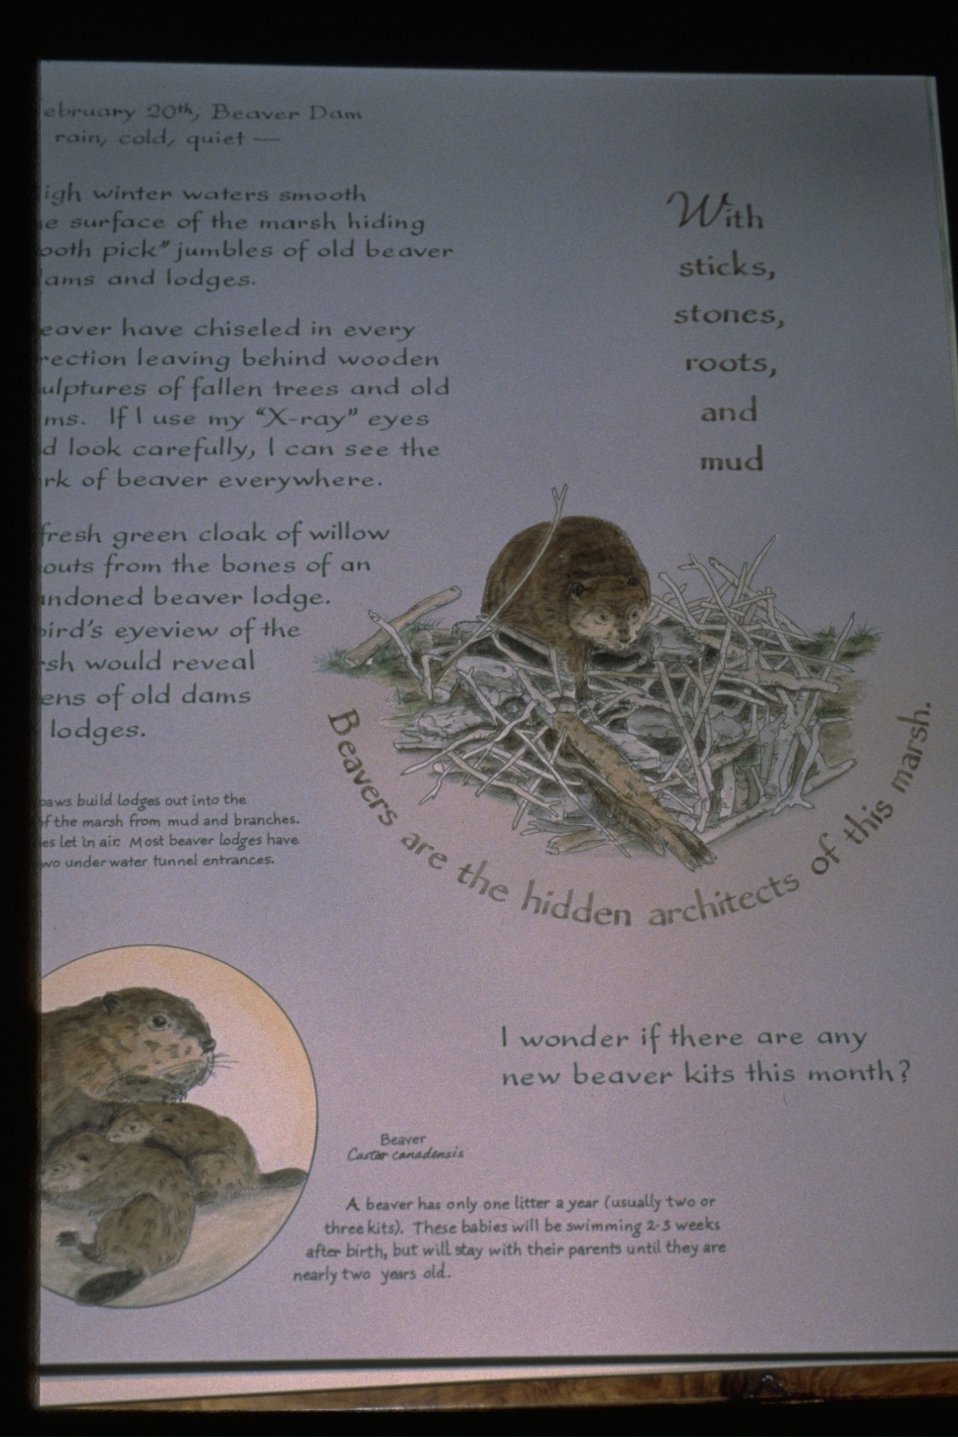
Interpretive Panels: Boardwalk Trail Journals.